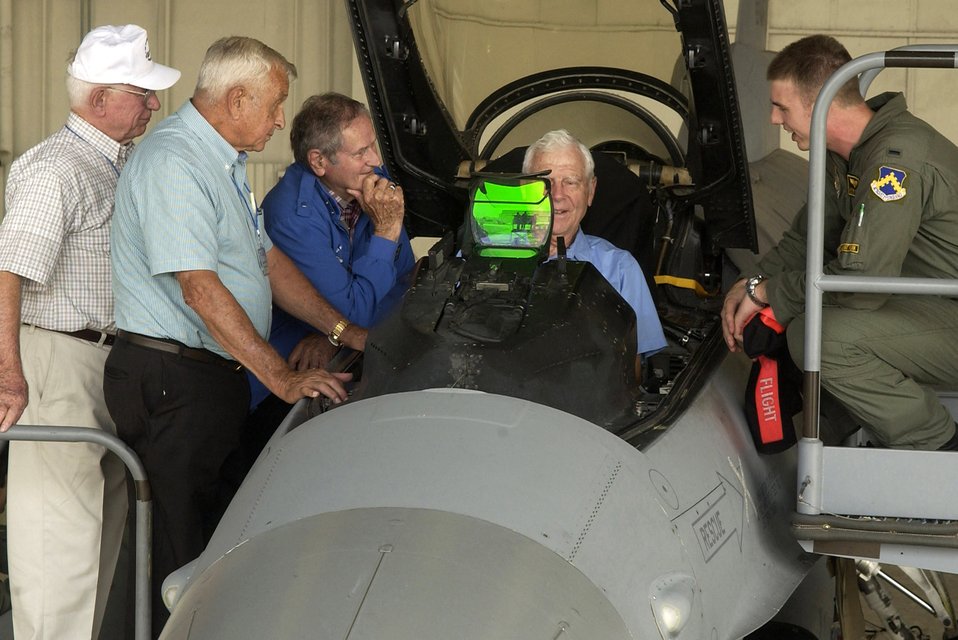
American pilots of yesteryear visit Kunsan, rekindle Korean War memories

Capt. Cesar Orozco shows retired Lt. Gen. Charles Cleveland the functions of the F-16 Fighting Falcon Sept. 11 as Cols. Wilbur Carpenter (left to right), Kenneth Shealy and Ralph Gibson observe. The four Korean War veterans were visiting Kunsan Air Base, South Korea, and sharing their experiences with 8th Fighter Wing Airmen. Captain Orozco is with the 35th Fighter Squadron.